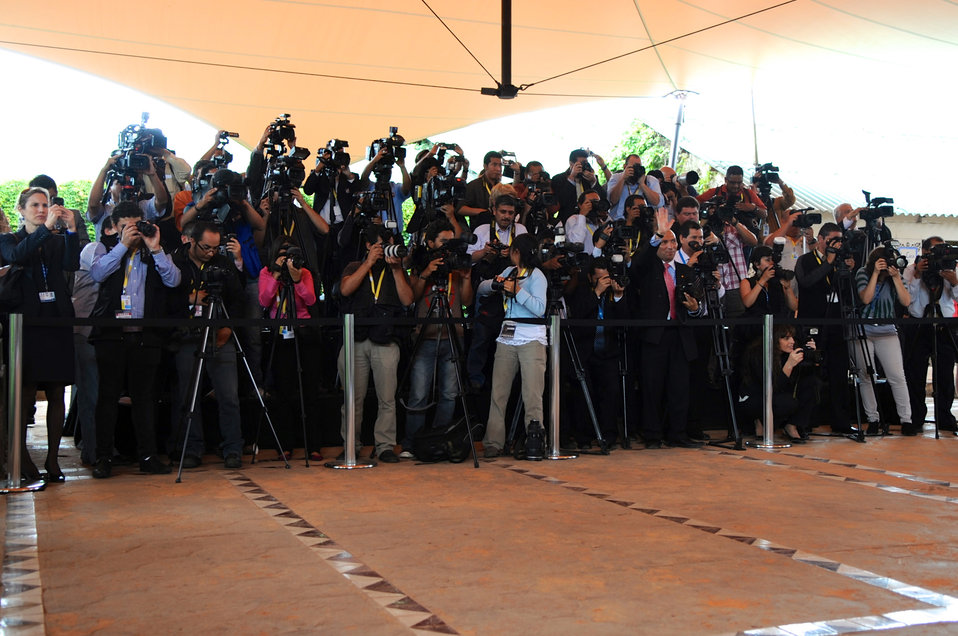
Photographers Take Photos of Secretary Kerry and Fellow OAS Foreign Ministers

Photographers take pictures of U.S. Secretary of State John Kerry and other foreign ministers amid an Organization of American States meeting in Antigua, Guatemala, on June 5, 2013.